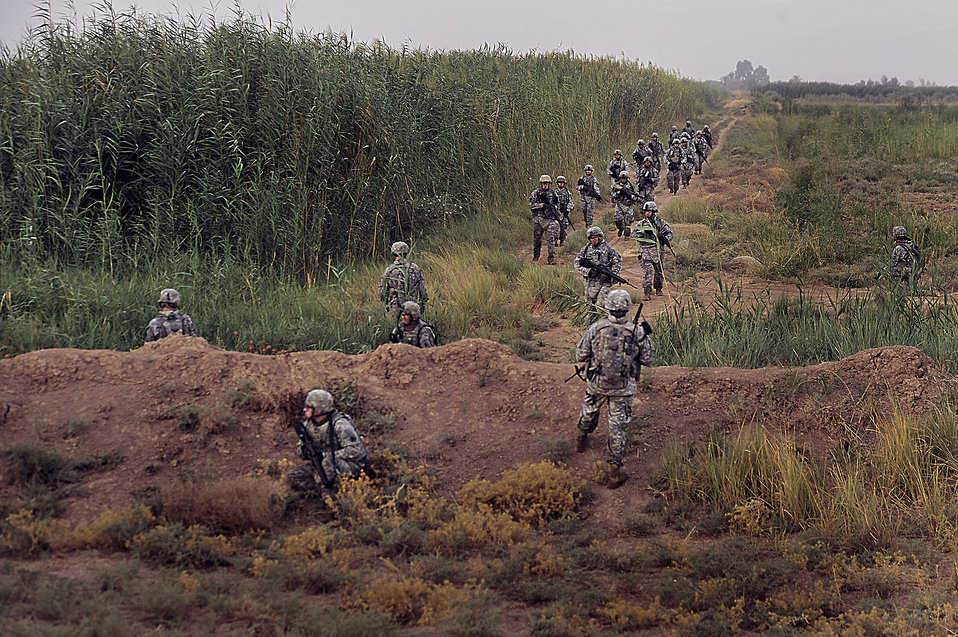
Operation Iraqi Freedom

Soldiers and Airmen patrol the perimeter of Joint Base Balad, Iraq during Operation Lewis and Clark Sept. 11. Operation Lewis and Clark was a joint patrol in which Air Force security forces Airmen were introduced to Balad's outer perimeter. Since Americans began operating from Balad in 2003, the Army has been responsible for base security. The 332nd Expeditionary Security Forces Group will soon be the largest security forces unit deployed in combat to defend an air base since Vietnam.